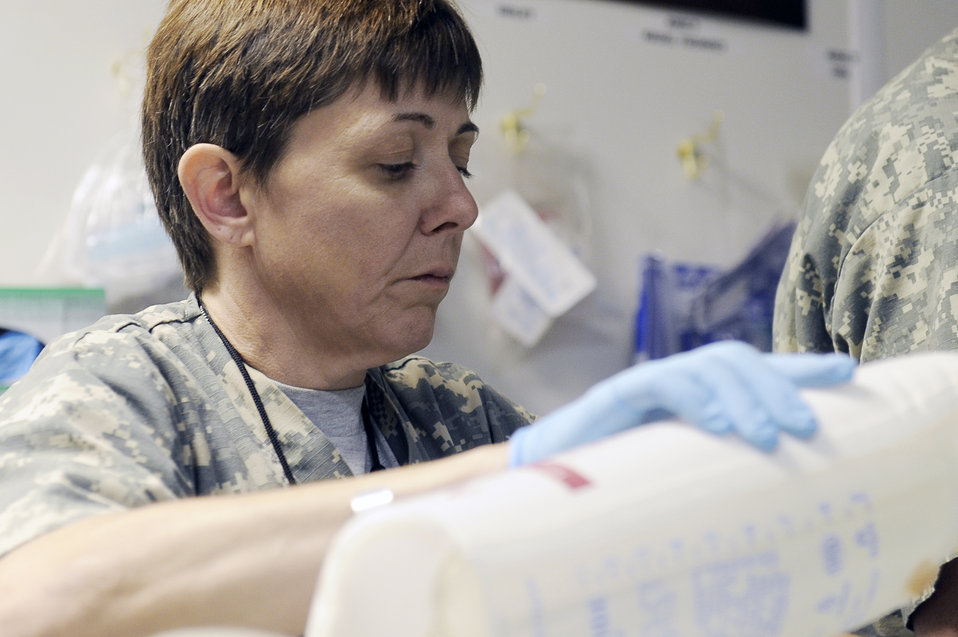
Medical team in Southwest Asia

Maj. Cheryl Lockhart sets up equipment for a patient May 5, 2010, at the Craig Joint Theater Hospital at Bagram Airfield, Afghanistan. Major Lockhart is with the 455th Expeditionary Medical Group/Task Force Medical East deployed from Travis Air Force Base, Calif.